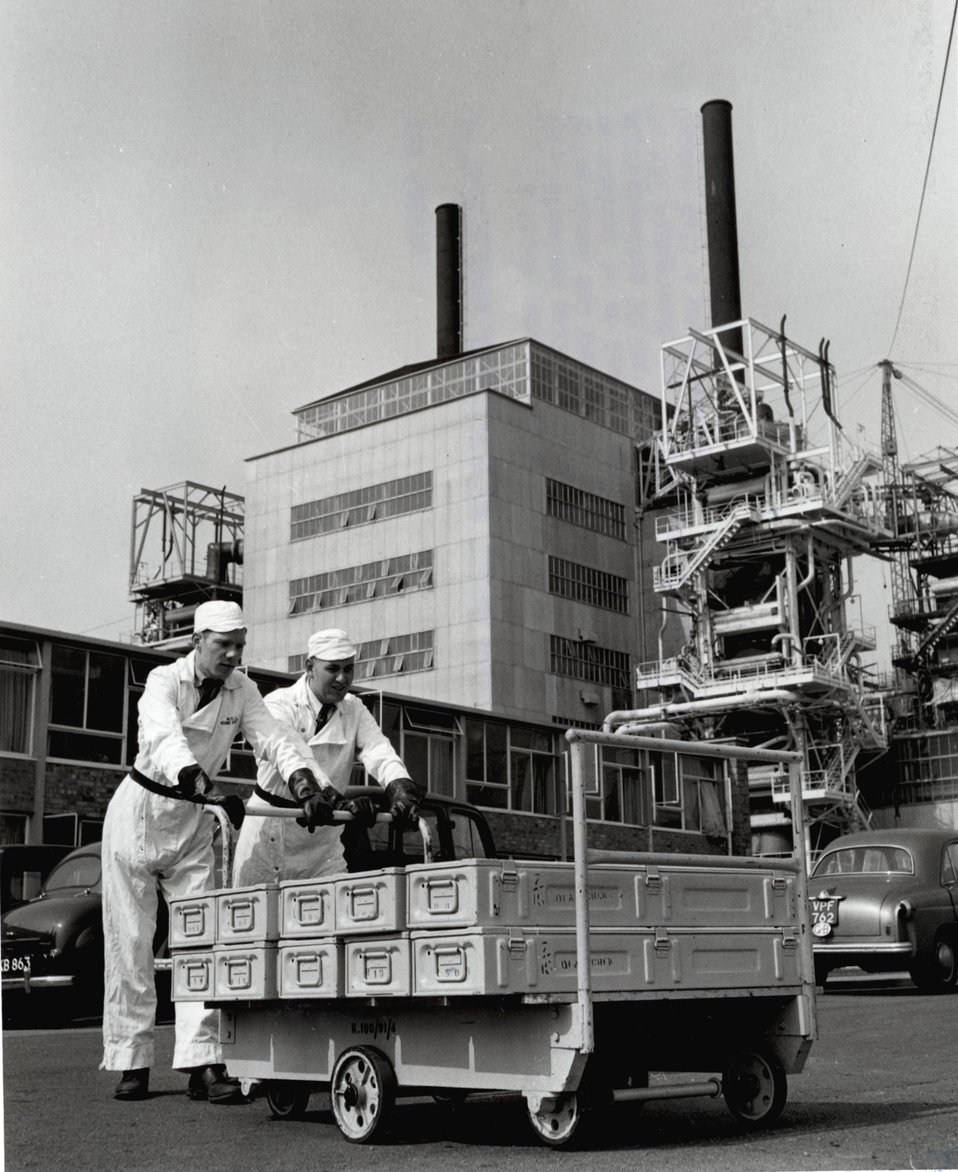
Britain's First Atomic Power Station, Calder Hall. A truck carrying 10 boxes of fule elements. In the background can be seen the almost complete No. 2 reactor of the Calder Hall A power station. c. 1956